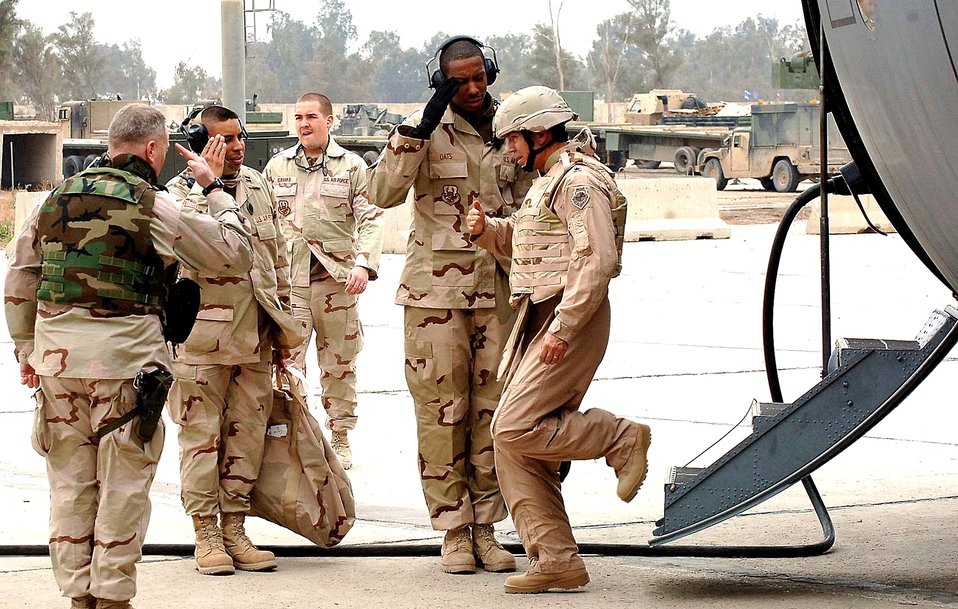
Red carpet treatment without the red carpet

SATHER AIR BASE, Iraq (AFPN) -- Capt. Edgar Lopez and Staff Sgt. Marcus Oats welcome one of many distinguished visitors who pass through the aerial port here while entering or leaving Iraq. The 447th Air Expeditionary Group protocol staff hosts DVs including senior officers, diplomats and celebrities.